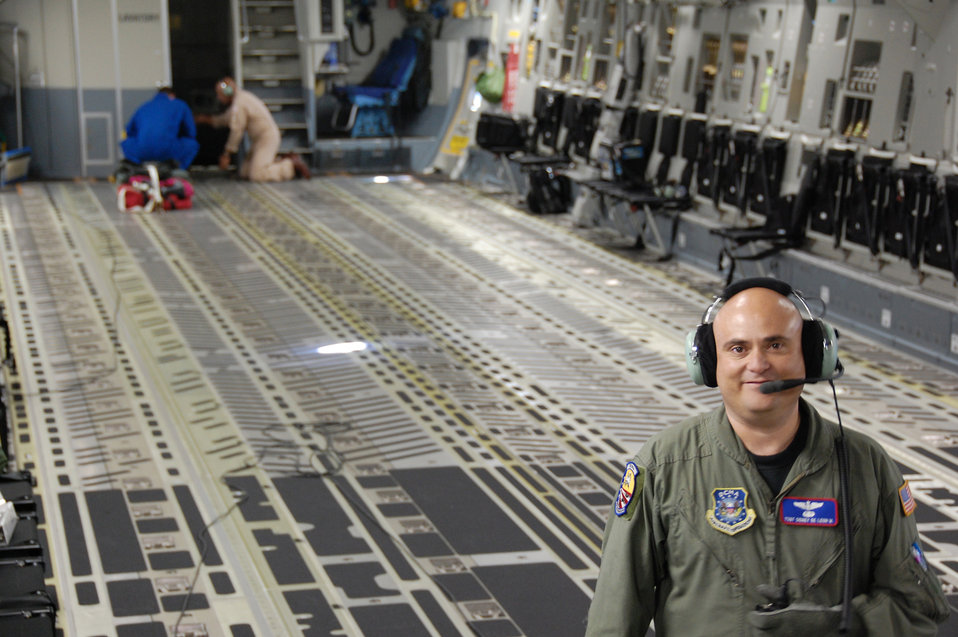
Acceptance crew ensures flight safety for Air Force

Tech. Sgt. Sidney De Leon works with a Boeing loadmaster and engineer in checking a C-17 Globemaster III for cabin pressurization leaks Oct. 15, 2009, at Long Beach, Calif. Sergeant De Leon is a Defense Contract Management Agency C-17 acceptance crew member.